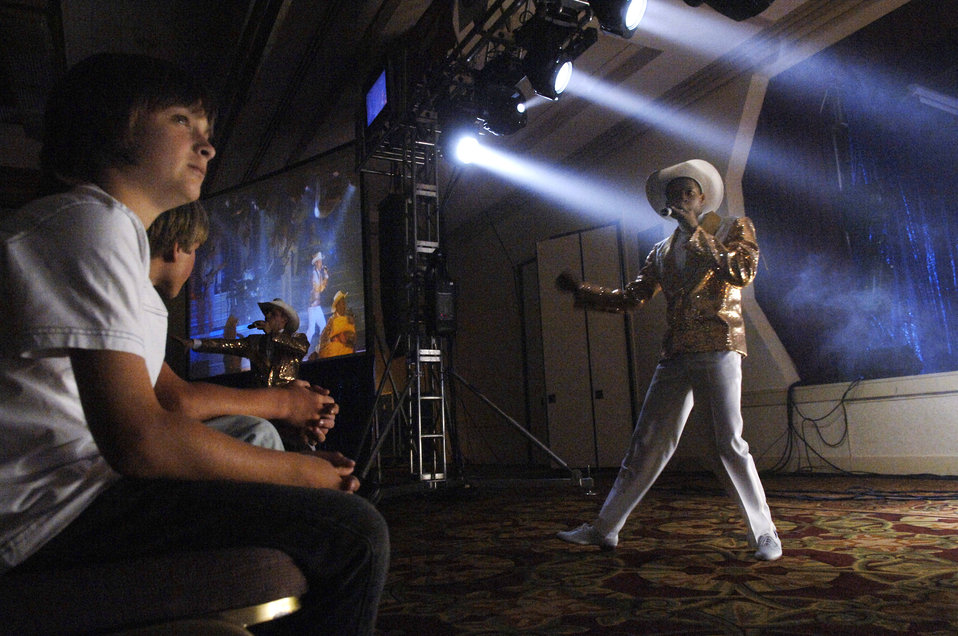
Tops in Blue entertains at Air Force Week

Lucas Conn, 11, watches Airmen from Tops in Blue perform as part of Air Force Week June 5 at the Radisson Hotel in Sacramento, Calif. Tops in Blue is the Air Force's premier entertainment group that performs for audiences around the globe.